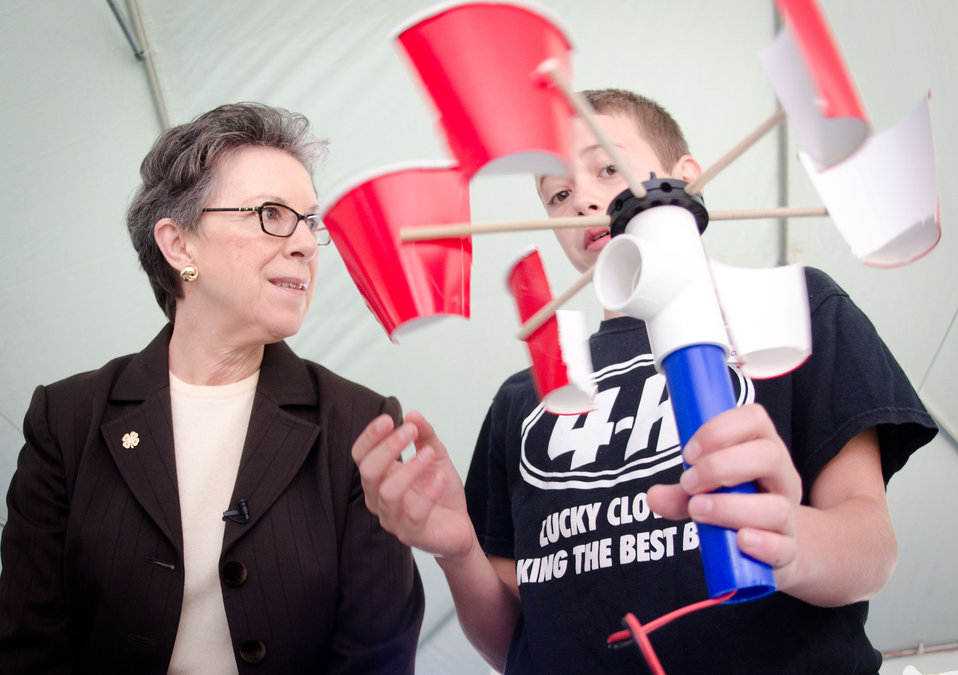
U.S. Department of Agriculture Under Secretary for Research, Education and Economics Dr. Catherine Woteki (l), looks over Curtis Gannon (r) wind generator efficiency measurement project at the National 4H Conference Center in Chevy Chase MD, on Wednesday, October 5, 2011. Curtis was participating in the 4-H Youth Science Day event “Wired for Wind”.